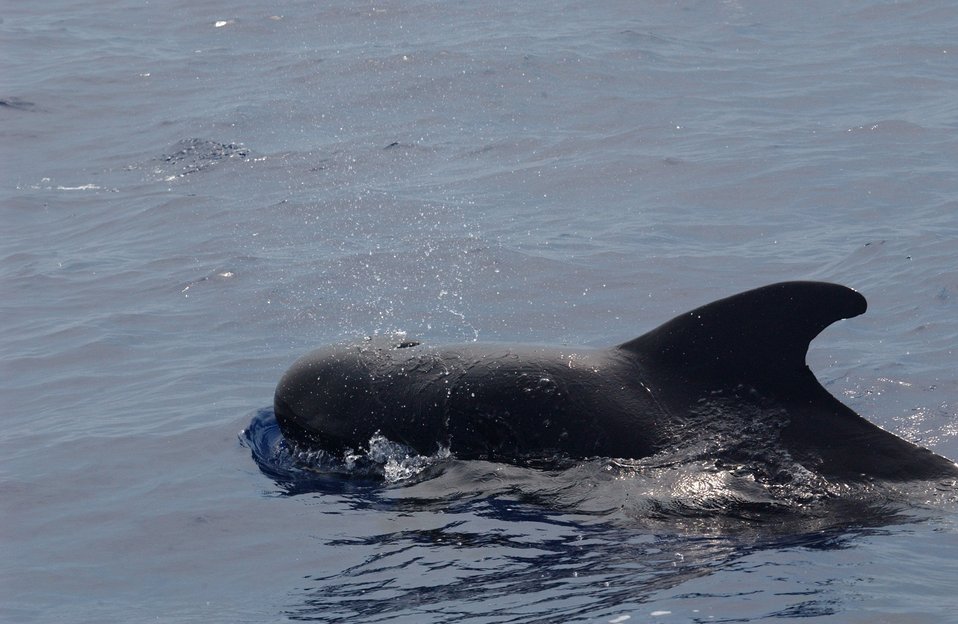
Pilot whale